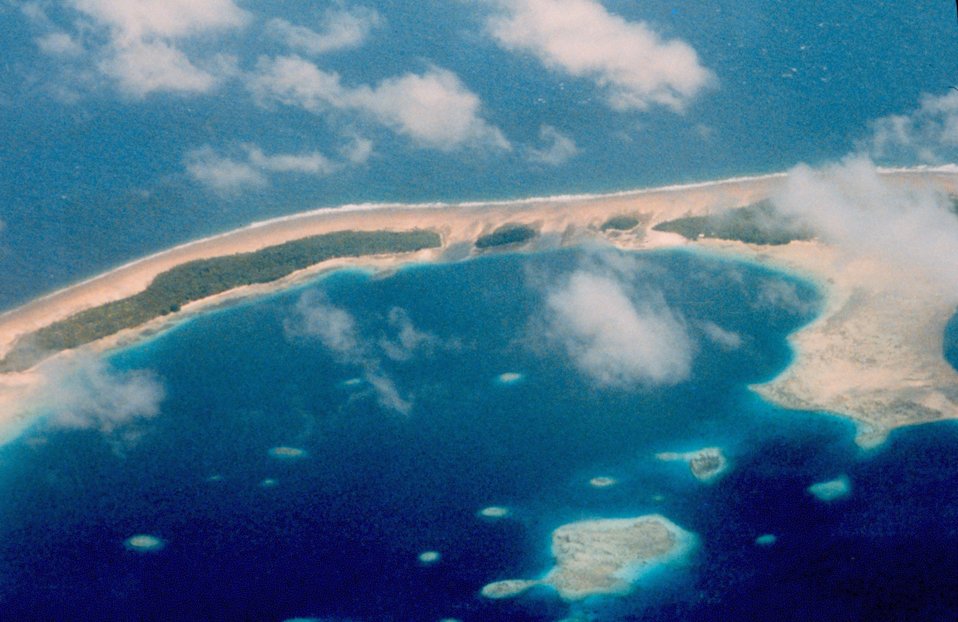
Pacific atoll with inner lagoon showing coral heads.